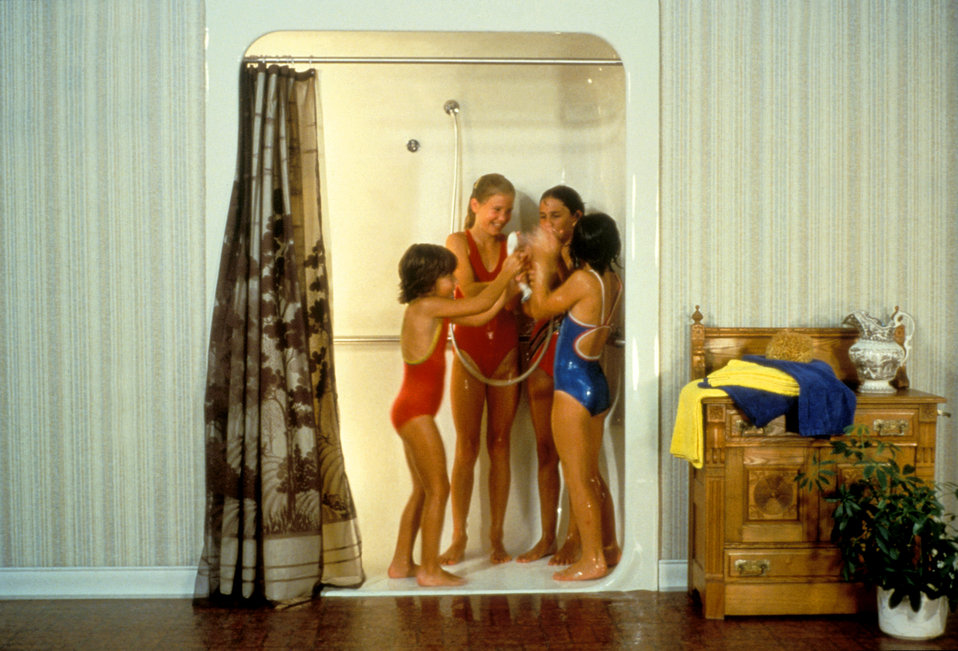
This was one of two images (PHIL# 9195 - 9196), depicting the usage of a white fiberglass 'curbless' shower stall, which was a single piece, thereby, minimizing assembly and installation times. In this particular photograph, four young girls were inside the shower unit, aiming the shower head at one another to deliver the flow of water, keeping it inside, and not outside the shower. A curbless shower is much easier to use by those for whom stepping into a standard shower is dangerous or impossible, as well as support a variety of activities other than a solitary shower, as evidenced here, and in PHIL# 9195 with the dog-bathing scenario.